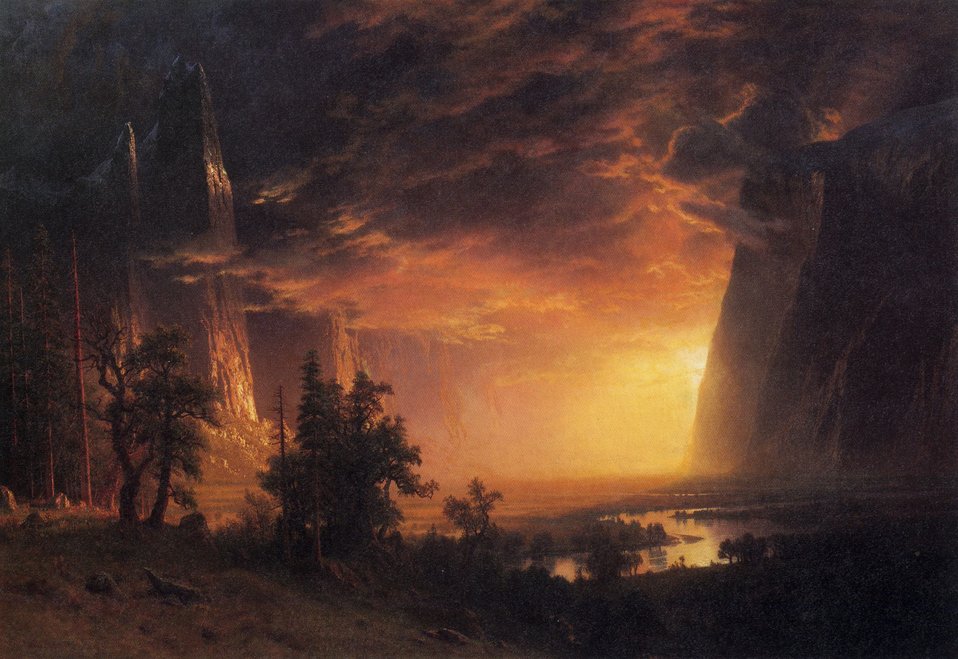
Bierstadt Albert Sunset in the Yosemite Valley